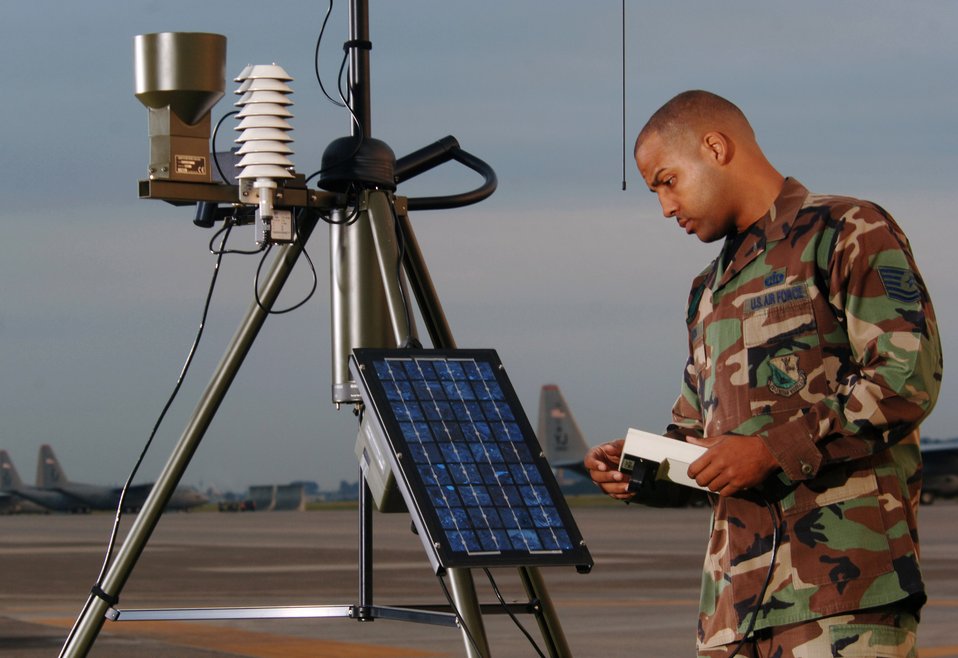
Weather update

YOKOTA AIR BASE, Japan -- Tech. Sgt. Damion Madison sets up a tactical meteorological observation system during training at the flightline here. The system is a collection of weather sensors connected to a computer and Iridium data modem that measure cloud base, surface pressure, temperatures, dew points, wind speed and density altitude. It provides near-real-time mission-critical weather date to war planners and decision makers. The sergeant is a member of the 374th Operations Support Squadron combat weather team here.